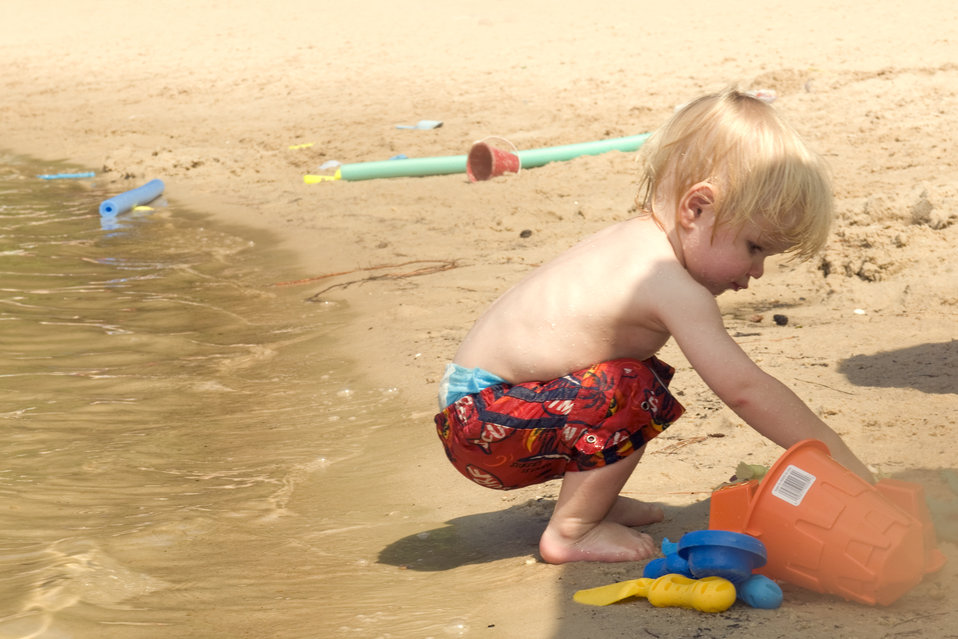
During this young boy's day out to the lake with his toys, he was pictured here bent over picking up one of his play-pieces from the wet sand. Given his sun-exposure, sunscreen had been applied to his skin in order to prevent overexposure to the sun's harmful ultraviolet rays. However, he would have been further protected if he'd been wearing a darkly-colored shirt.